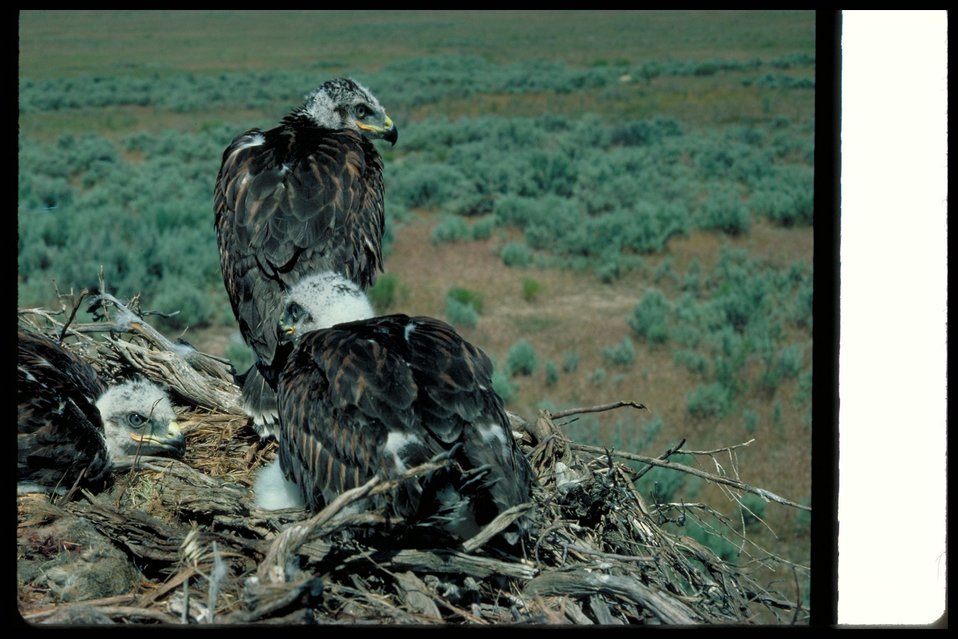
Slaters Flat Ferrugenous Hawk Birds of Prey National Conservation Area BOP Owyhee Field Office LSRD Lower Snake River District